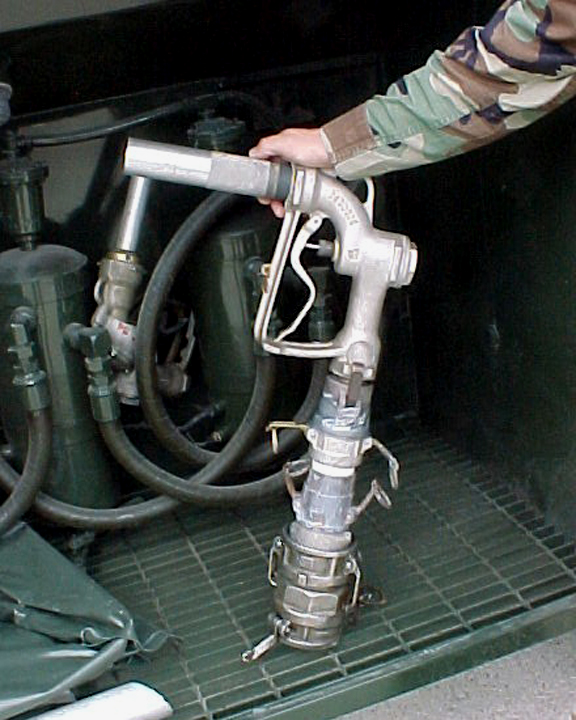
Saving the day

ELLINGTON FIELD, Texas -- Master Sgt. Lynn Bailey inspects a custom-built fuel truck nozzle here. He and Staff Sgt. Vic Taylor created the nozzle after two Texas Army National Guard fuel trucks were unable to refuel evacuation support buses in Beaumont, Texas, Sept. 23. Those fuel nozzles were not compatible with the buses. Sergeants Bailey and Taylor are with the 147th Fighter Wing fuels shop.